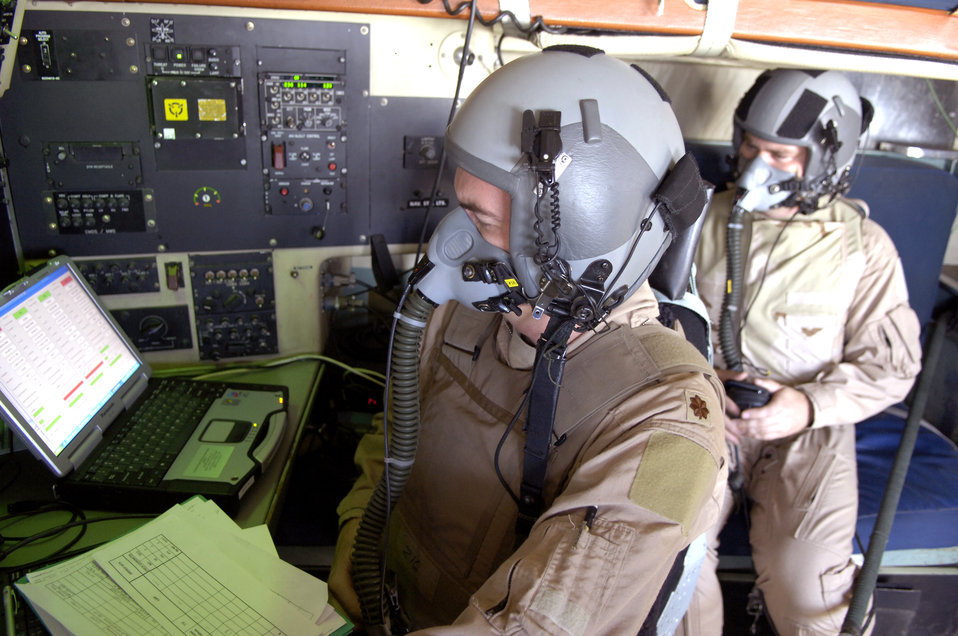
Air drop

Maj. Russ Hedden (front) and Maj. Daniel DeVoe look over the Precision Air Drop System mission planner computer while on an airdrop mission over Afghanistan Aug. 25 on board a 774th Expeditionary Airlift Squadron C-130 Hercules.